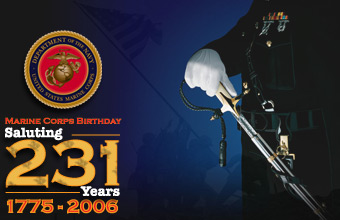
Marine Corps Birthday

The U.S. Marine Corps celebrates its 231st birthday, Nov. 10, 2006.